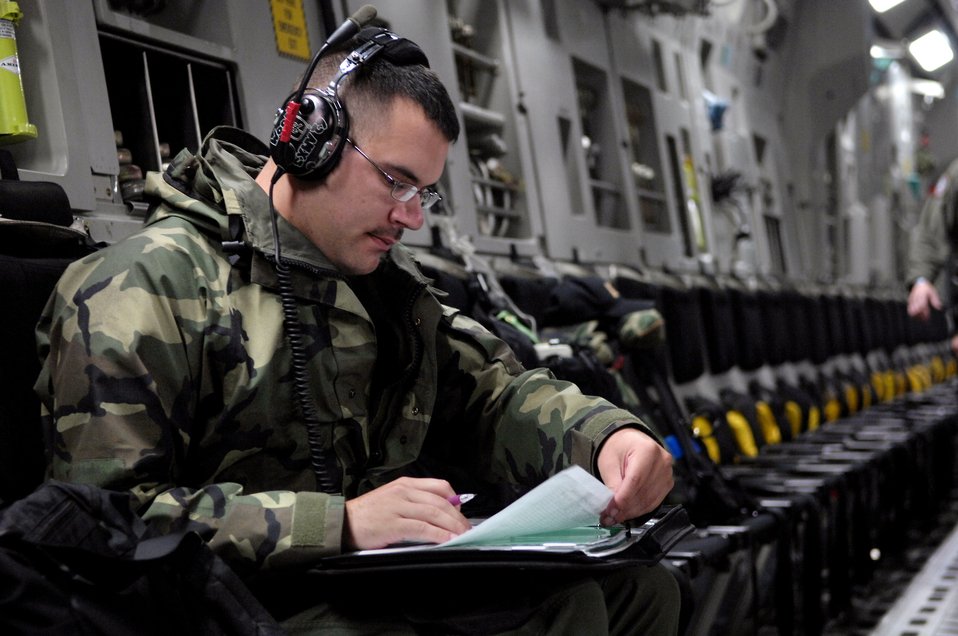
Off to the South Pole

Staff Sgt. Christopher Woods looks over a maintenance log before launching a C-17 Globemaster III for a winter fly-in mission for Operation Deep Freeze Aug. 20 from Christchurch, New Zealand. A C-17 and 31 Airmen from McChord Air Force Base, Wash., are flying in an augmentation of scientists, support staff, food and equipment for the U.S. Antarctic Program at McMurdo Station.